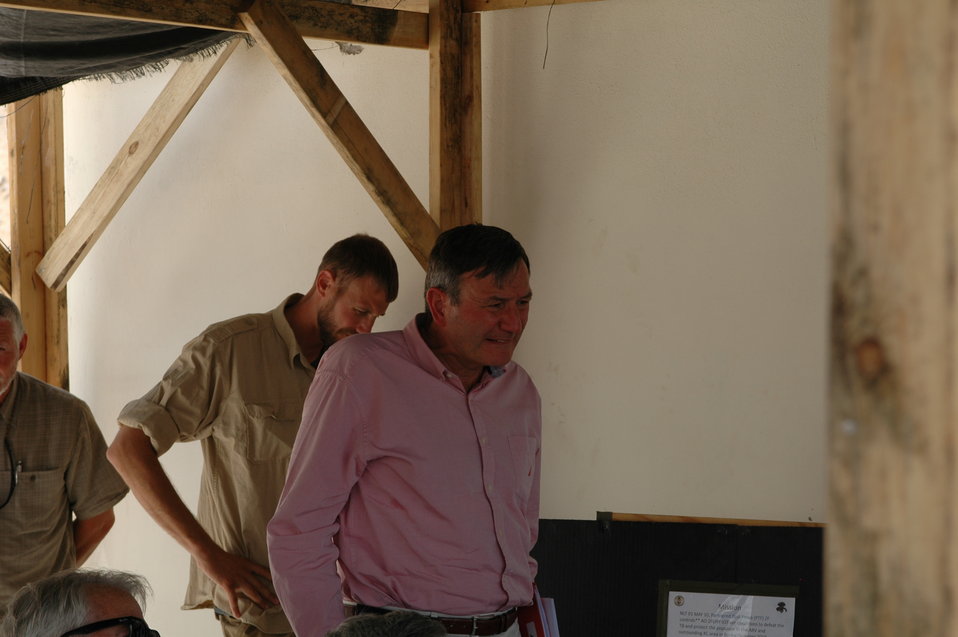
CODEL Berman